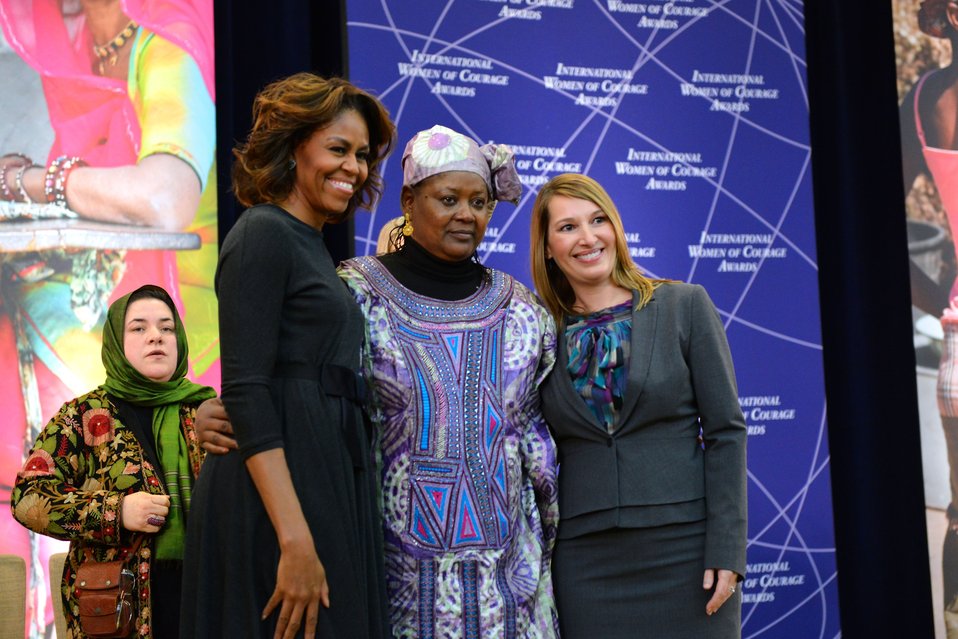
First Lady Michelle Obama and Deputy Secretary Higginbottom With 2014 IWOC Awardee Fatimata Touré of Mali

First Lady Michelle Obama and Deputy Secretary Higginbottom pose for a photo with 2014 Secretary of State’s International Women of Courage Award Winner Fatimata Touré, Community Activist and Executive Director of the Groupe de Recherche, de’Etude, de Formation Femme-Action in Mali, at the U.S. Department of State in Washington, D.C., on March 4, 2014.